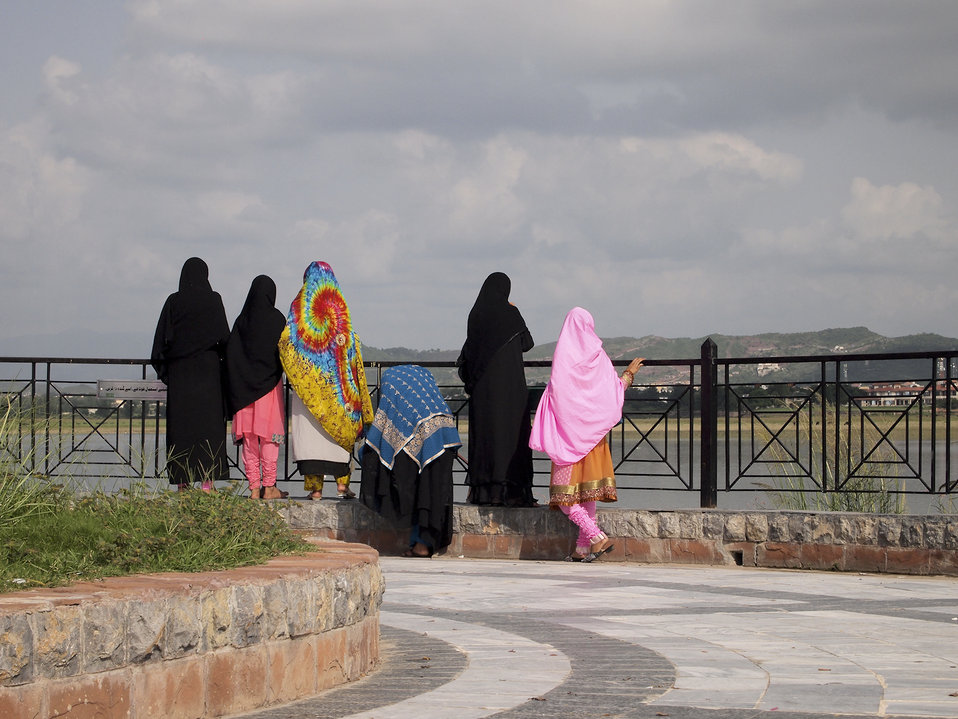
Islamabad, September 24, 2012 – Photo by Ammad Ahmad Khan, taken at Lake View Park, Rawal Lake, Islamabad - Shot from a USAID-organized 'photo camp' for 16 young aspiring journalists from FATA.